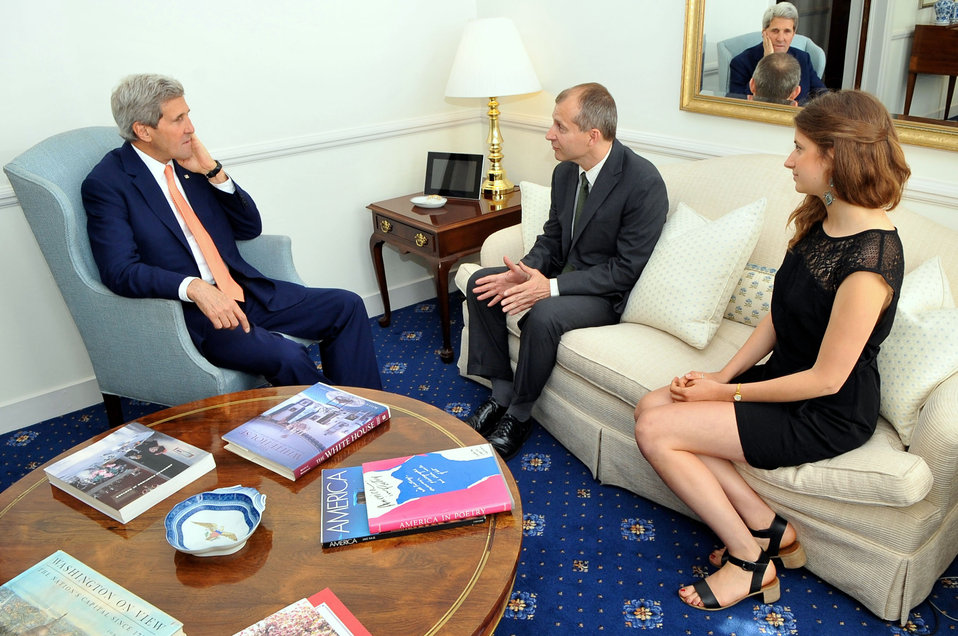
Secretary Kerry Listens to Wounded Foreign Service Officer Lodinsky Upon Reunion in London

U.S. Secretary of State John Kerry listens as Foreign Service Officer Jeff Lodinsky, who was wounded in Afghanistan and first met by the Secretary two days after he was sworn in, speaks with him and his daughter Reka, who is working at Embassy London this summer, before the Secretary addressed employees at Embassy London on June 13, 2014.